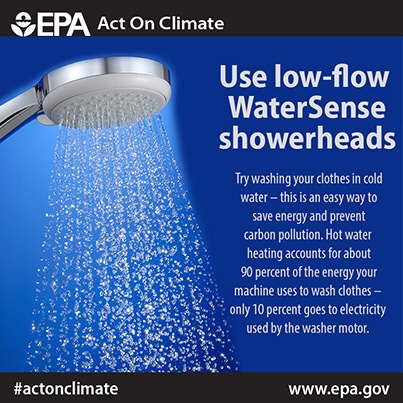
Use low-flow WaterSense showerheads

Shower better to save 2,900 gallons of water annually and #ActOnClimate.